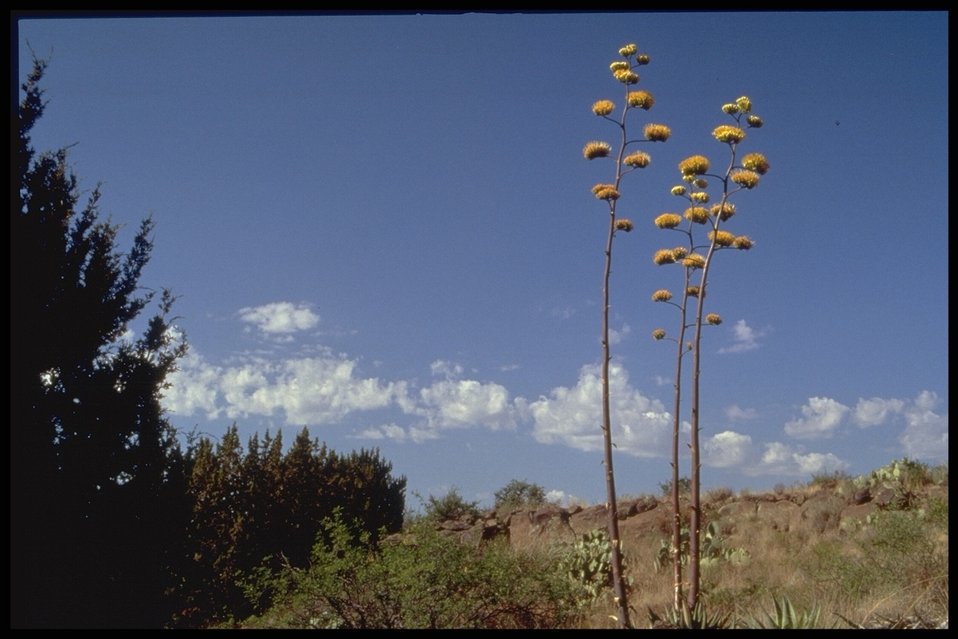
The beautiful Agua Fria National Monument is located 40 miles north of Phoenix, Arizona.